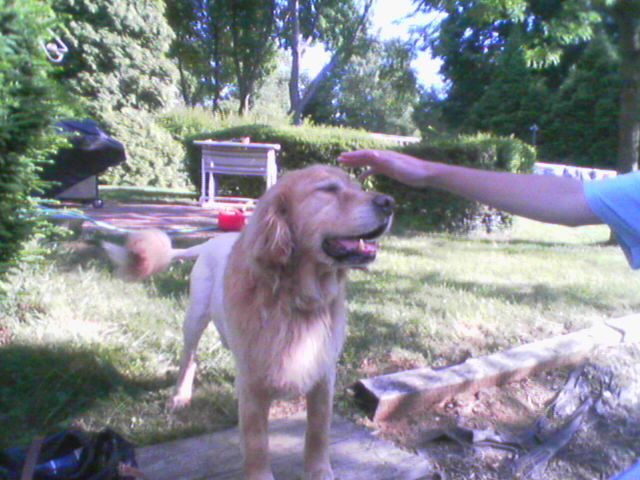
Ten year old Golden Retriever with a lion cut in West Chester, Pennsylvania RIP 'Fred' (4/19/08)